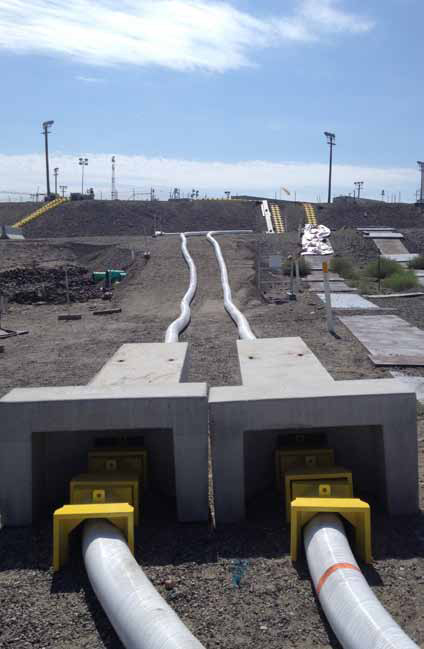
Workers recently replaced about 1,400 feet of Hose-In-Hose Transfer Lines (HIHTL) connecting C and AN farms to facilitate waste transfer from single-shell to double-shell tanks.

The HIHTLs were replaced using a technique designed to minimize the impact on waste retrievals. The AN transfer lines are an essential part of transferring waste from C-Farm SSTs to AN-Farm DSTs. With the recent uptick in waste-retrieval activities and the old lines set to expire at the end of August, the HIHTL replacement effort quickly became a high-profile project.